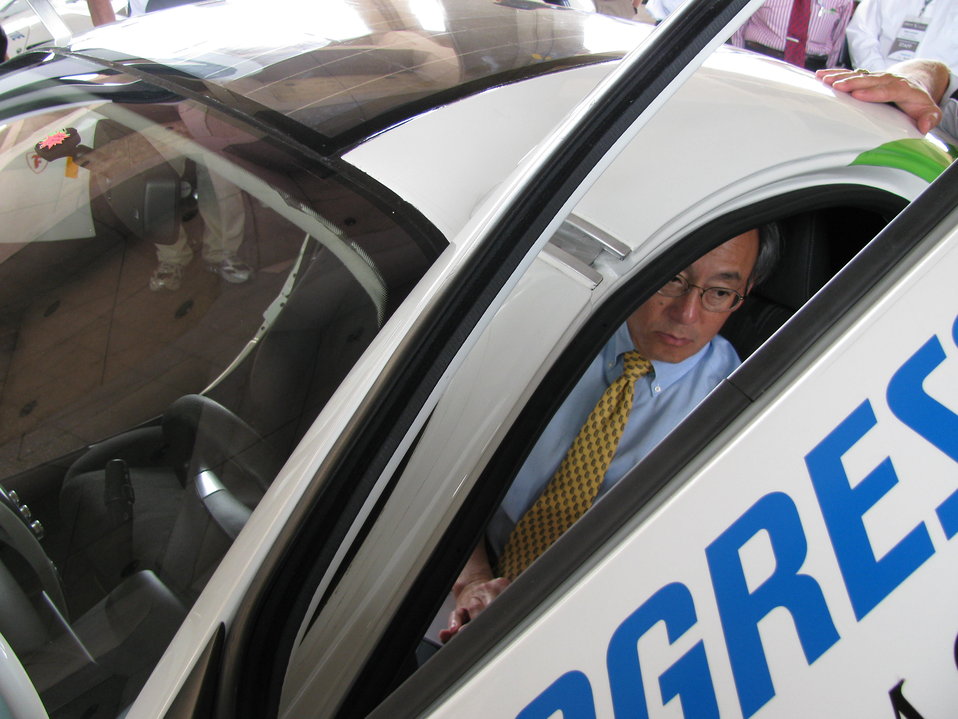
X Prize 039